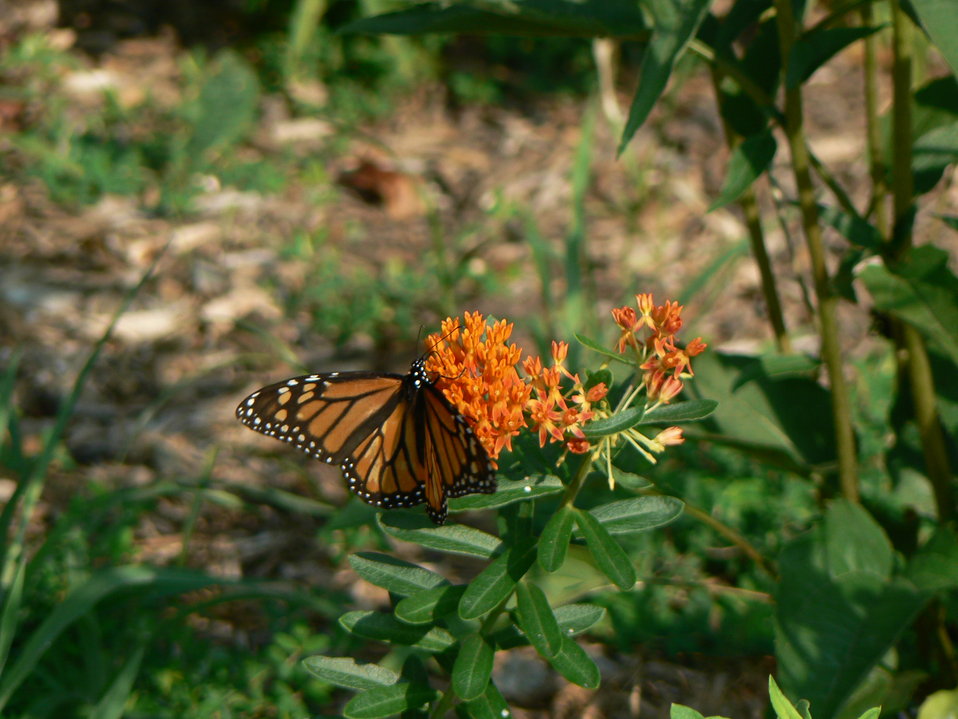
Monarch on butterflyweed at Cape May National Wildlife Refuge.